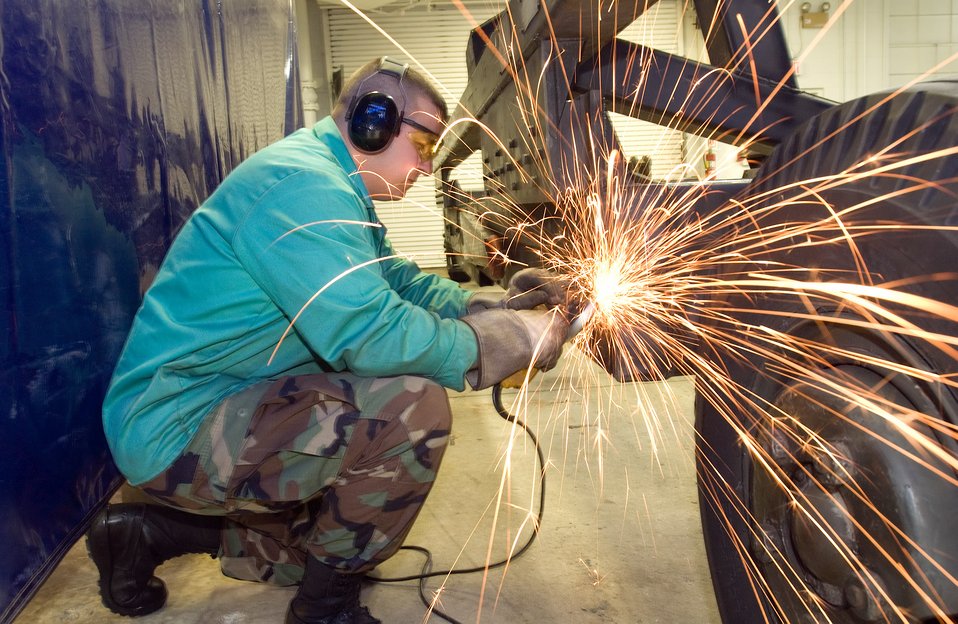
Metal spark

DOVER AIR FORCE BASE, Del. (AFPN) -- Senior Airman Duane Miles prepares metal for C-5 Galaxy engine maintenance. Airman Miles is assigned to the 512th Equipment Maintenance Squadron. The squadron is a unit of the 512th Airlift Wing, which is the only Air Force Reserve Command unit in Delaware and has 1,870 Reservists. Airmen of the 512th AW work side-by-side with the 436th Airlift Wing to maintain and fly the C-5 Galaxy.